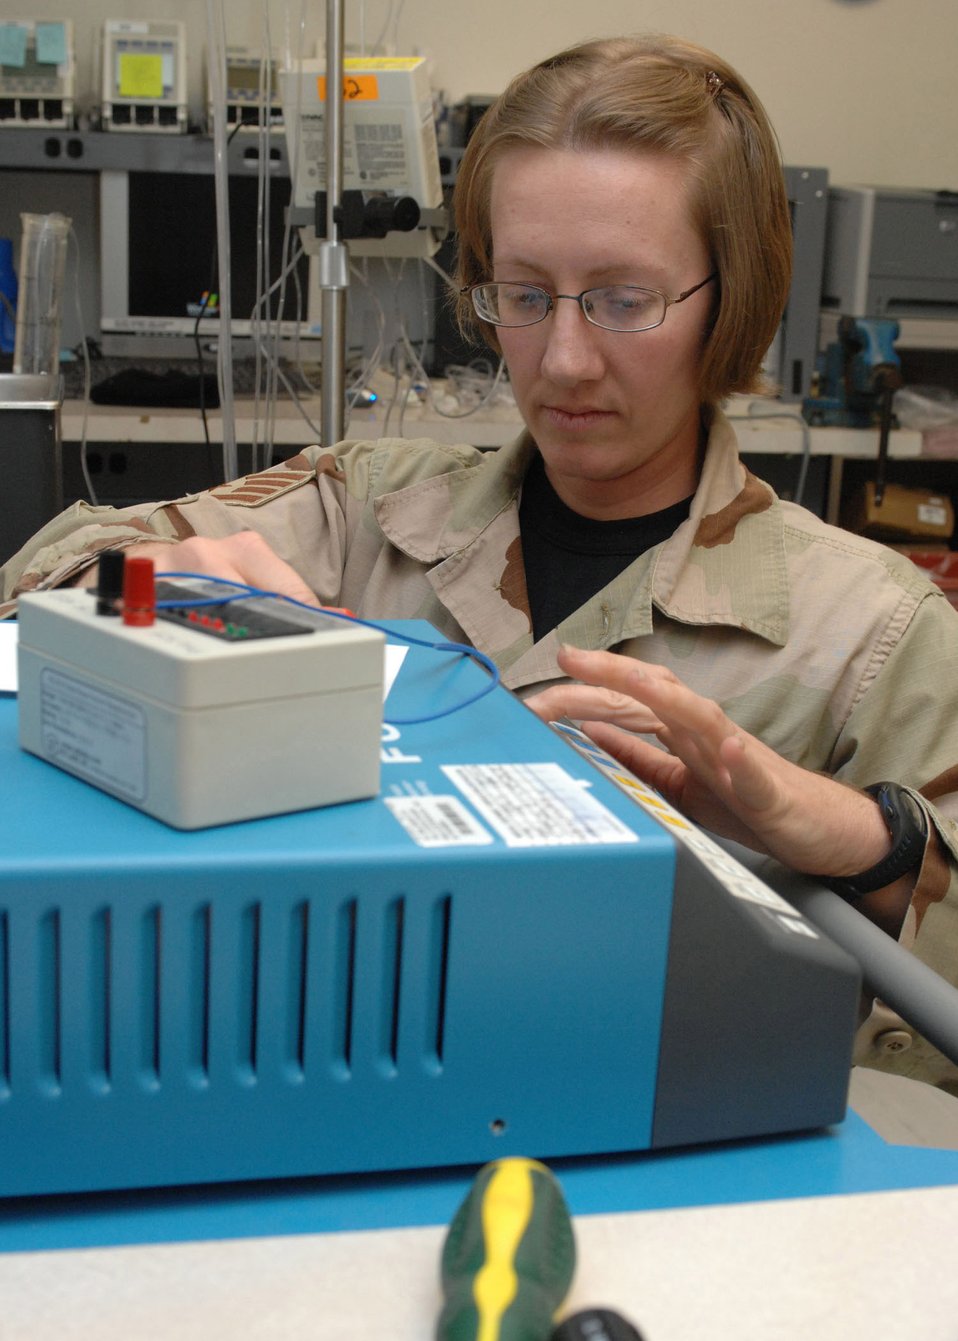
Bagram medical members important part of team

Staff Sgt. Jana Madrid works on a electrosurgical unit Feb. 5 at Bagram Air Base, in Afghanistan. Sergeant Madrid is responsible for maintaining all medical equipment at the Craig Joint Theater Hospital here. Sergeant Madrid is a biomedical equipment technician deployed from the 49th Medical Support Squadron at Holloman Air Force Base, N.M. The Craig Joint Theater Hospital is a state-of-the-art hospital that rivals any stateside hospital of equivalent size.